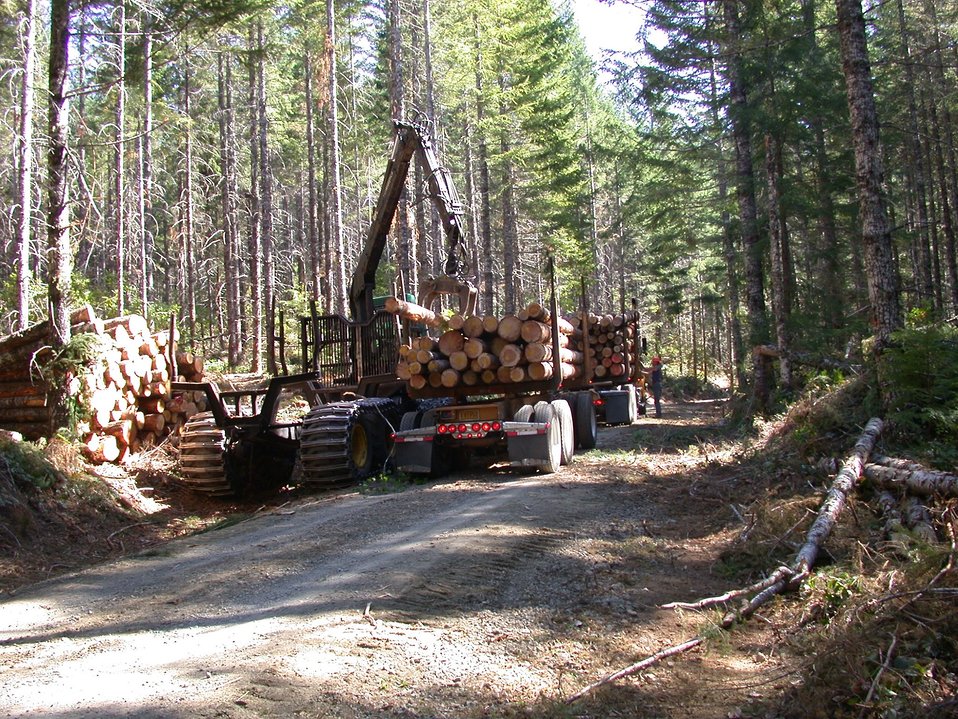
Camas East Timber Sale in Late Successional Reserve.